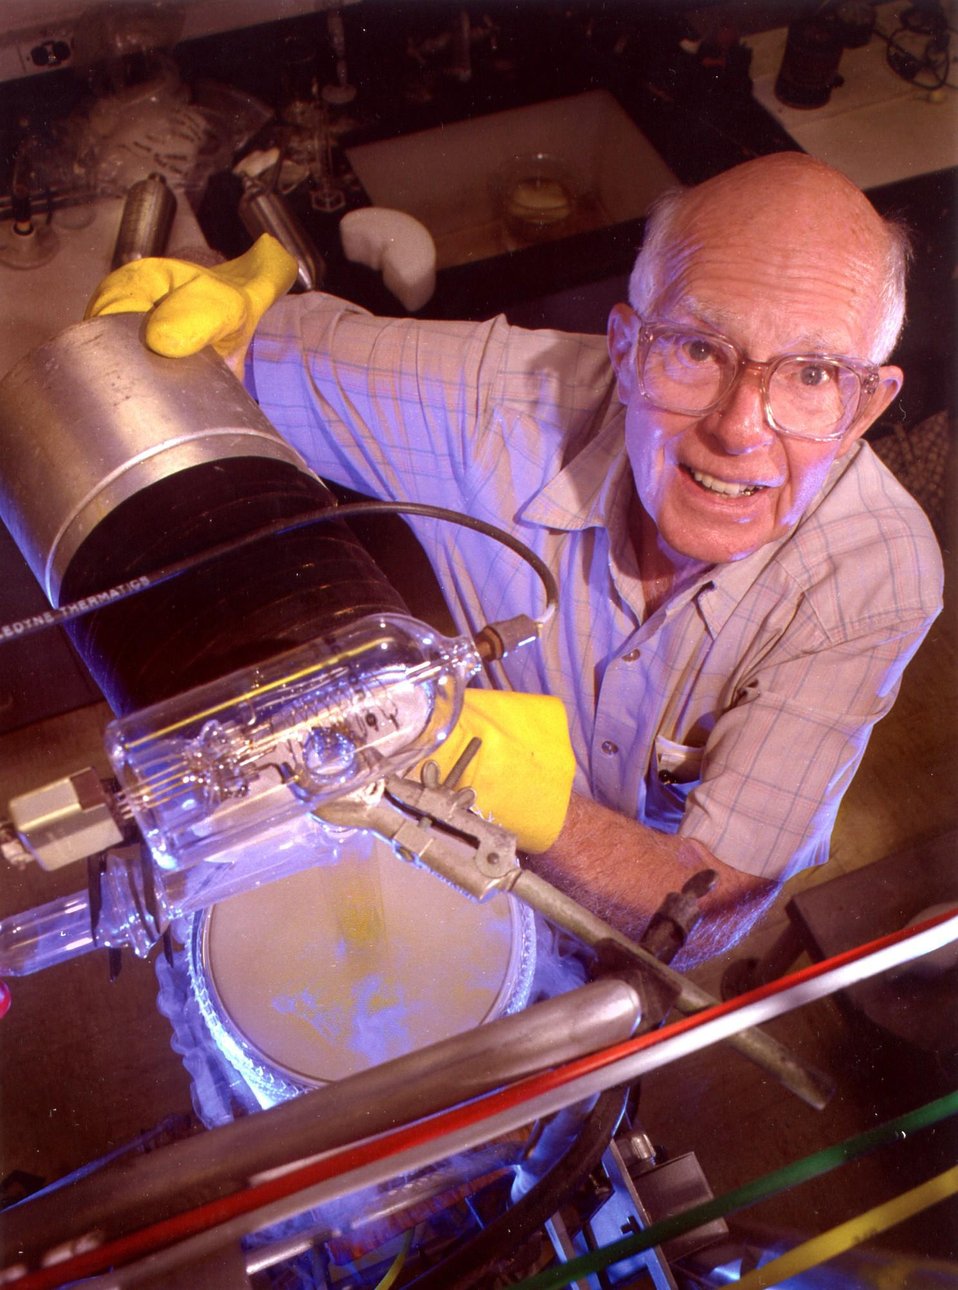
BROOKHAVEN SCIENTIST, 2002 NOBEL LAUREATE IN PHYSICS, DR. RAYMOND DAVIS, JR.

RAYMOND DAVIS, RETIRED BROOKHAVEN NATIONAL LABORATORY SCIENTIST, WON THE 2002 NOBEL PRIZE IN PHYSICS FOR HIS WORK IN DETECTING SOLAR NEUTRINOS WHICH CREATED THE FIELD OF NEUTRINO ASTRONOMY. DAVIS WAS THE FIRST SCIENTIST TO DETECT SOLAR NEUTRINOS, THE ELUSIVE, GHOSTLIKE PARTICLES PRODUCED IN THE NUCLEAR REACTIONS OCCURRING IN THE CORE OF THE SUN, PROVIDING THE SUN'S ENERGY. HIS SOLAR NEUTRINO DETECTOR EXPERIMENT WAS CONDUCTED A MILE UNDERGROUND IN THE HOMESTAKE GOLD MINE IN SOUTH DAKOTA.